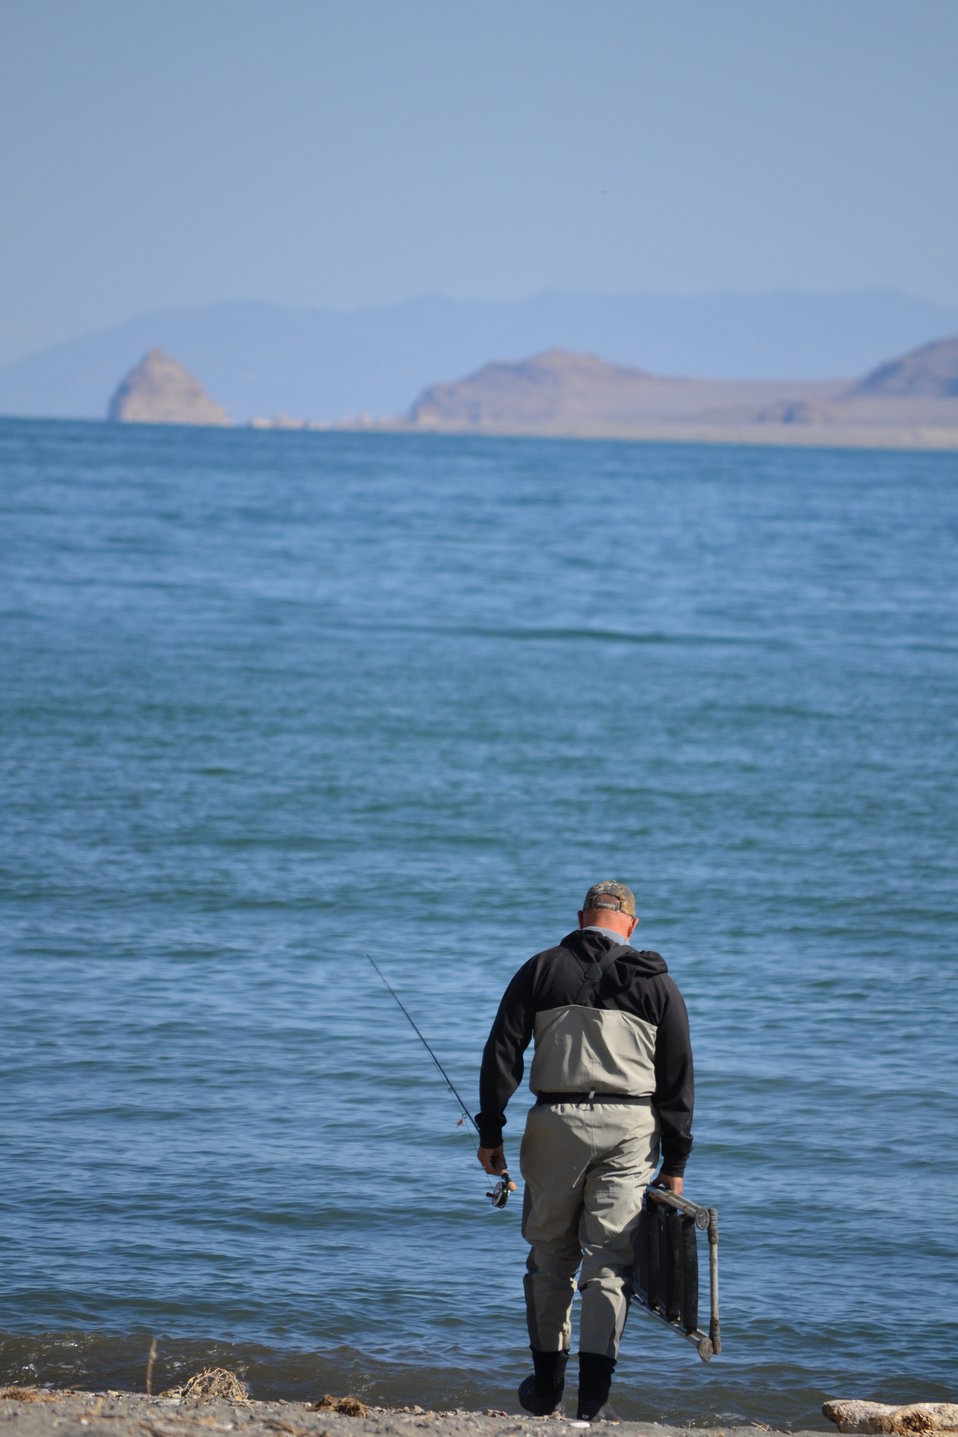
Fisherman at Pyramid Lake

Anaho Island is located in Pyramid Lake which is known for large Lahontan cutthroat trout.